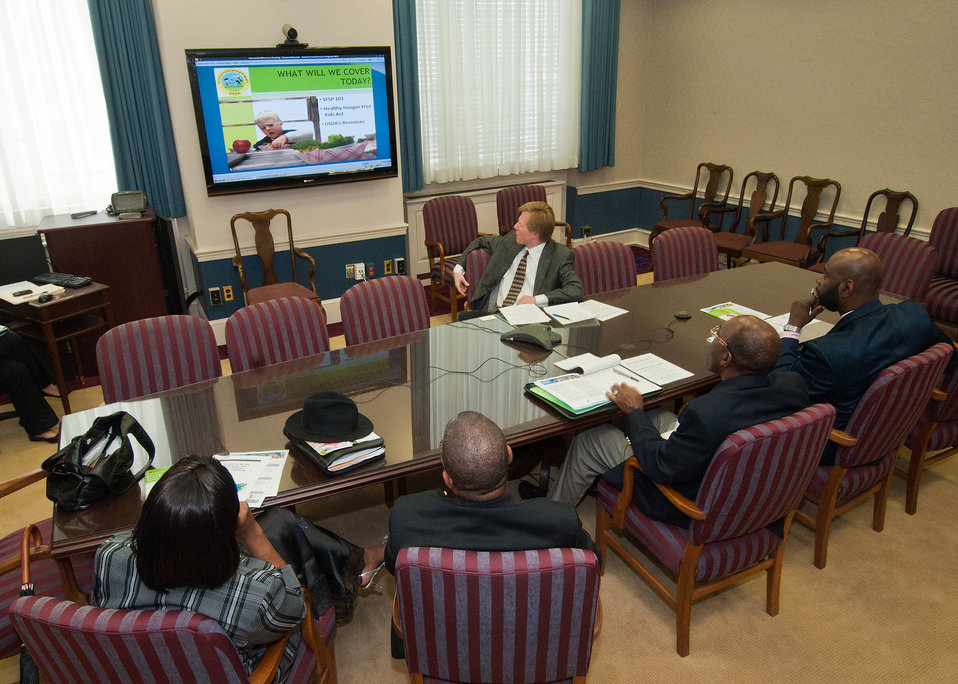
From left: Sister Valerie Butler and Pastor Nathan Butler, Victorious Living, Church of God in Christ, Norfolk, Virginia, Pastor Dwayne E. Jones, Spread the News, Church of God in Christ, Temple Hills, Maryland, Pastor Donnell Smith, Emmanuel, Church of God in Christ, Washington, DC, participated in a Summer Food Service Program Webinar Watch Party at the United States Department of Agriculture, hosted by Max Finberg (center), Director, Center for Faith Based and Neighborhood Partnerships, Friday, May 13, 2011. The webinar was held to demonstrate the process of developing a summer food program for civic institutions. The Summer Food Service Program, created by the Food and Nutrition Service to ensure that children in low-income areas could continue to receive nutritious meals during long school vacations, when they do not have access to school lunch or breakfast.